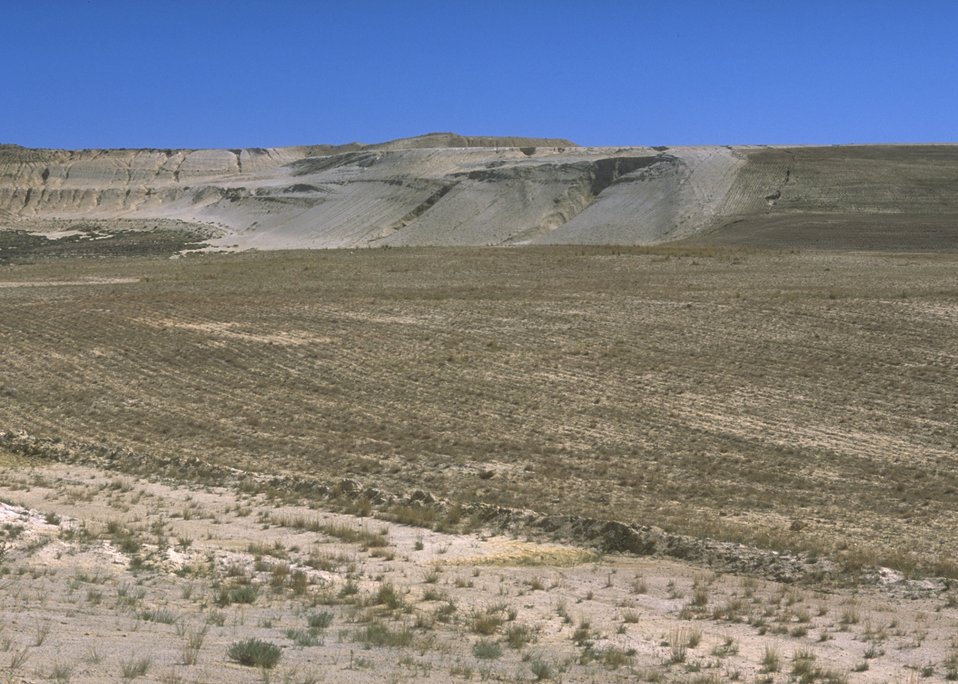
Gas Hill Abandoned Mine Lands in various stages of rehabilitation, Lander Field Office.